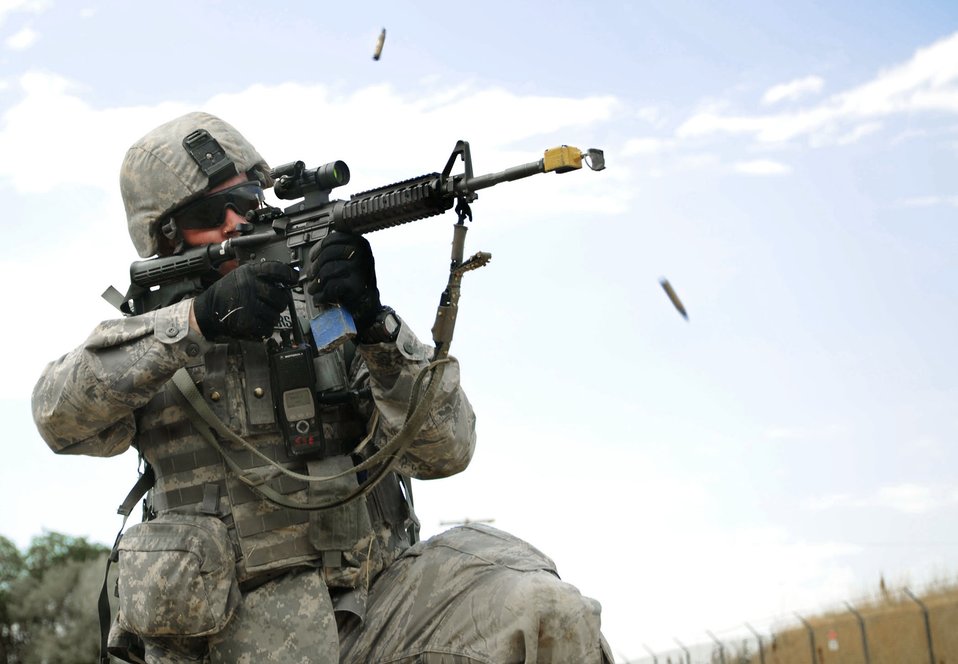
Getting the target

Senior Airman Aaron Davis, 75th Security Forces Squadron, participates in week-long combat skills training at Hill Air Force Base, Utah. The training focused on individual skills, self-aid and buddy care, and staged scenarios with hostile forces.